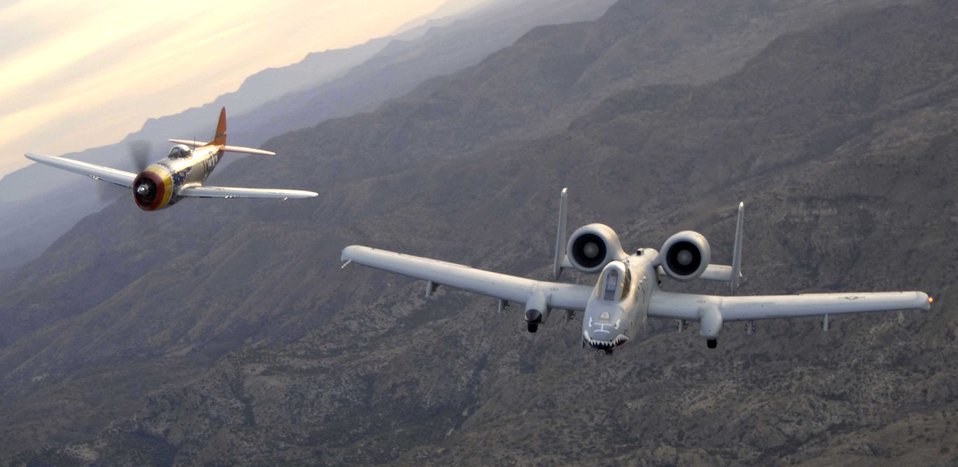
Heritage flight

World War II-era P-47 Thunderbolt and an A-10 Thunderbolt II fly side by side during the 2006 Heritage Conference. The conference combines different U.S. aircraft from more than 60 years of aviation history to ensure certification in performing air shows worldwide.